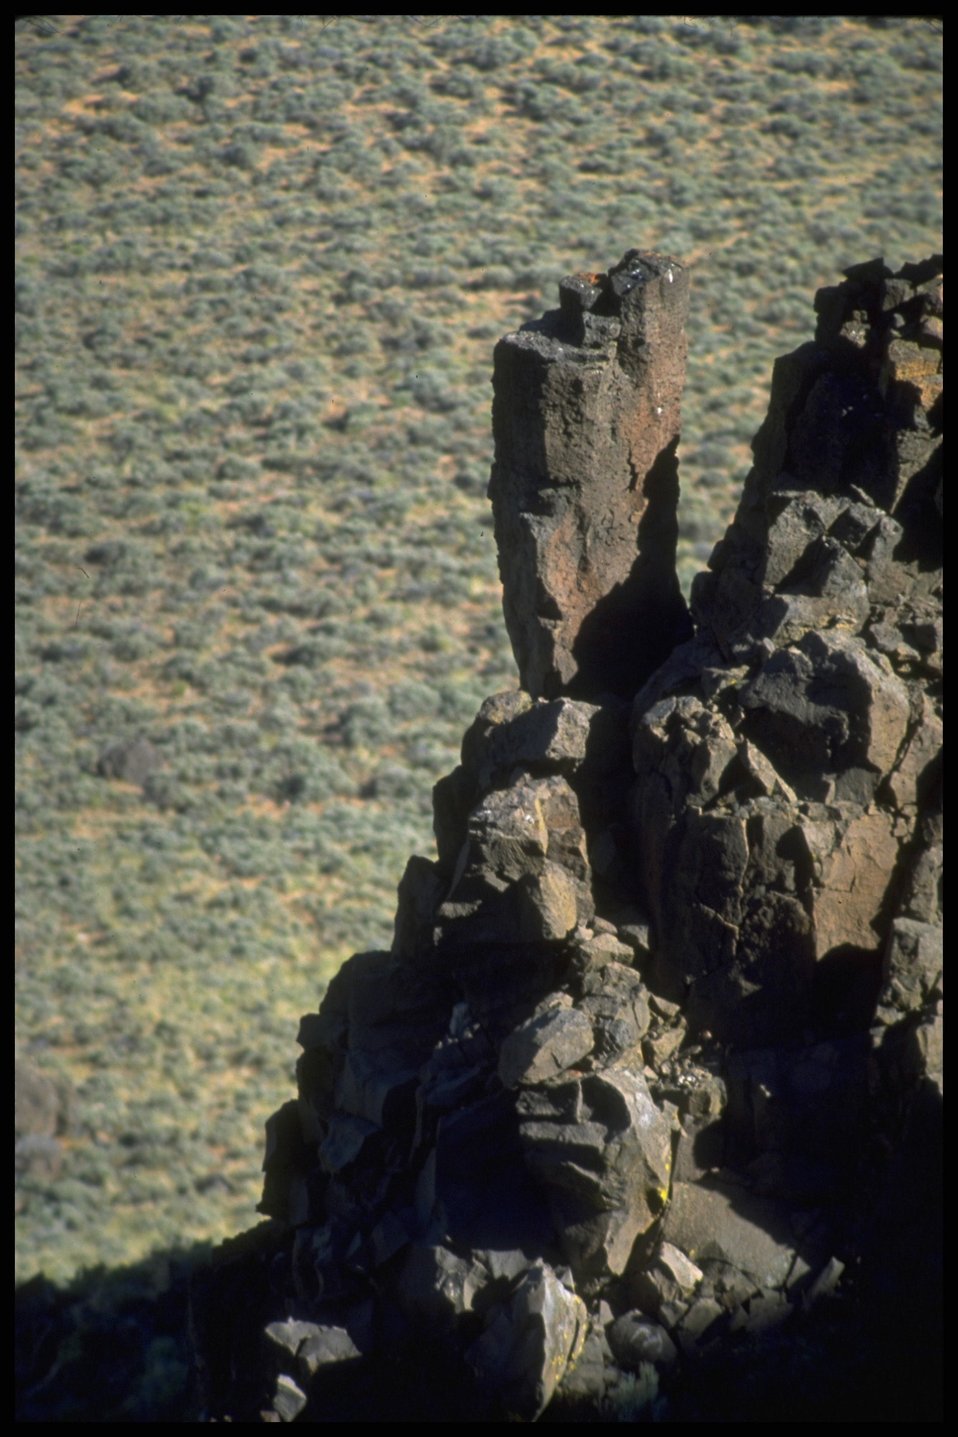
Interesting rock formation, Lakeview District.